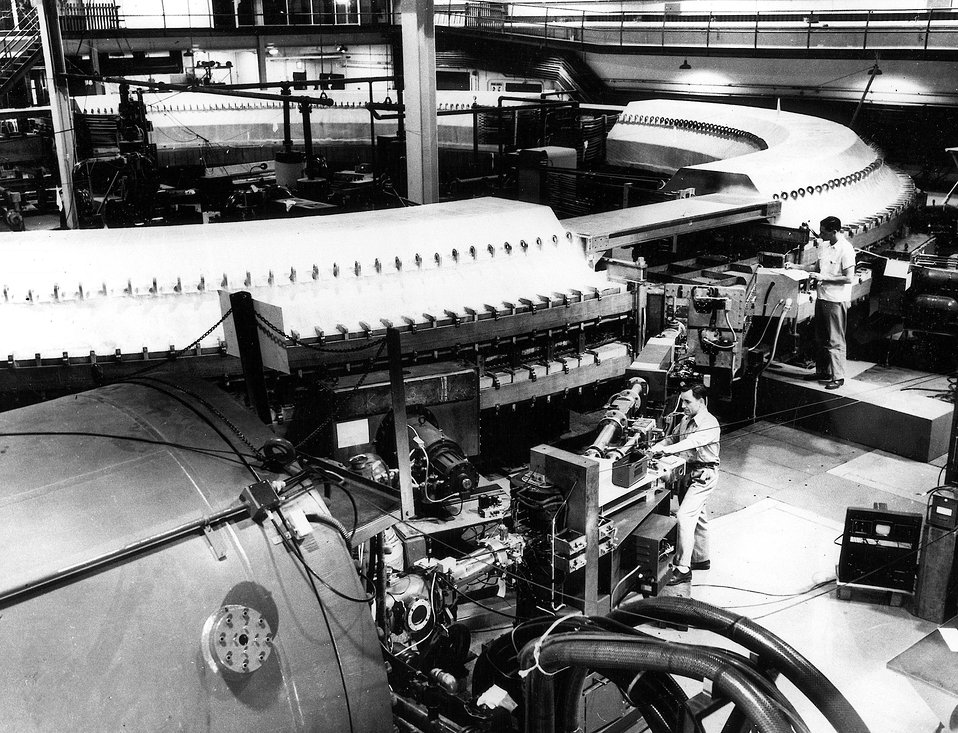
Injection equipment connected to Brookhaven cosmotron. c. 1958